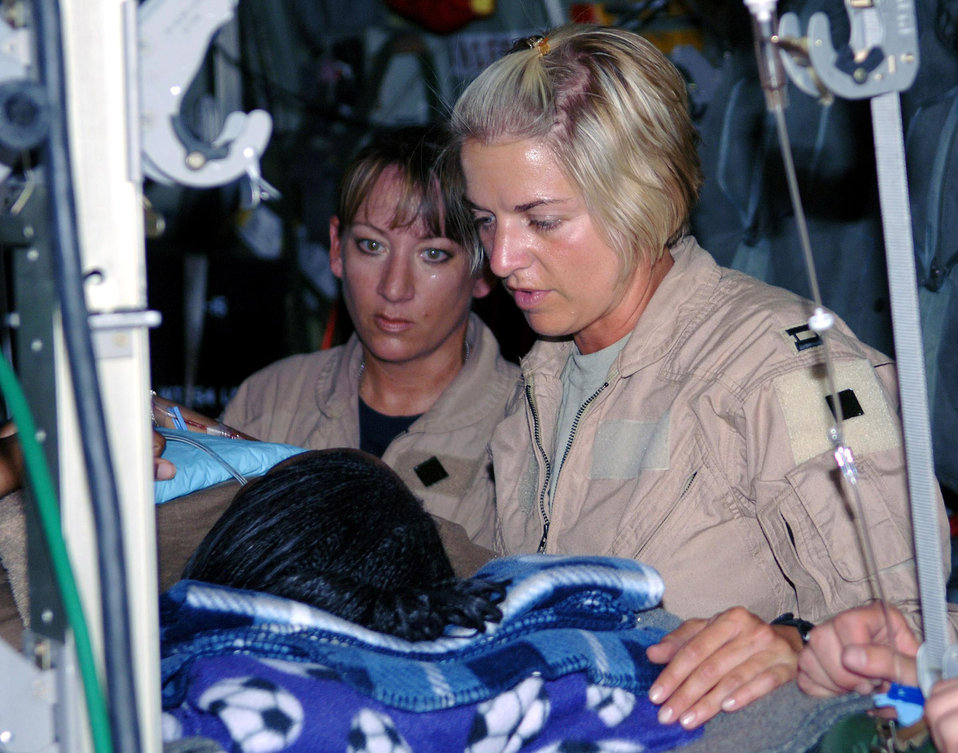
Providing care in the air

Master Sgt. Theresa Sheheen (left) and Capt. Michelle Mulberry tend to a patient on an aeromedical evacuation flight from Bagram Airfield, Afghanistan. Capt. Mulberry, a flight nurse, and Sergeant Sheheen, a medical technician, are deployed from the Wyoming Air National Guard's 187th Aeromedical Evacuation Squadron.